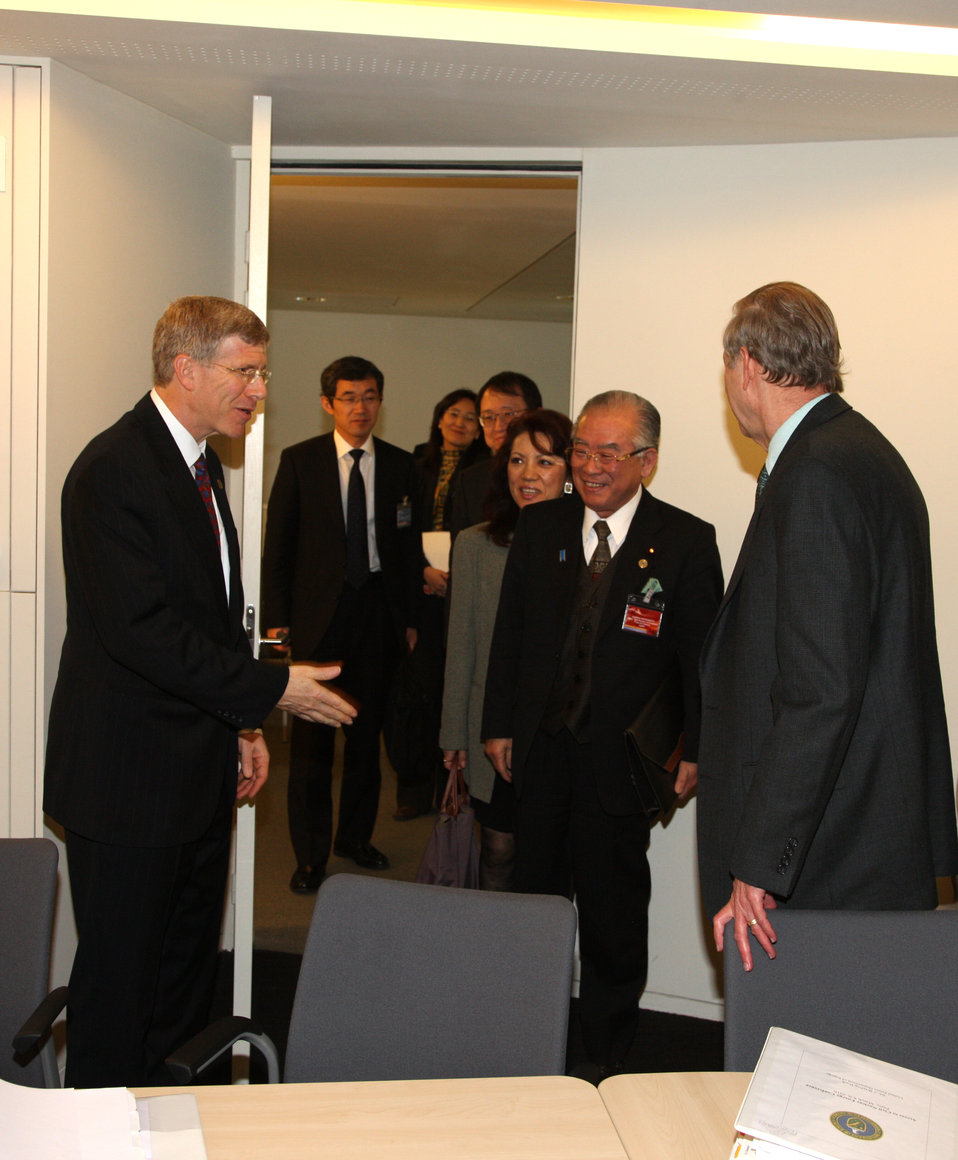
5C3K3748 copy